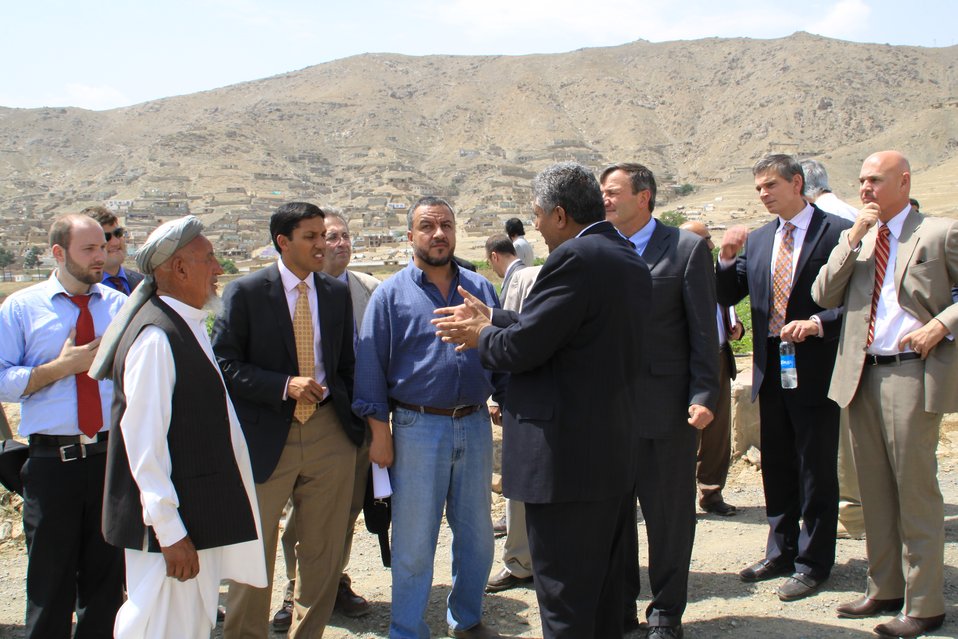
Badam Bagh Farm